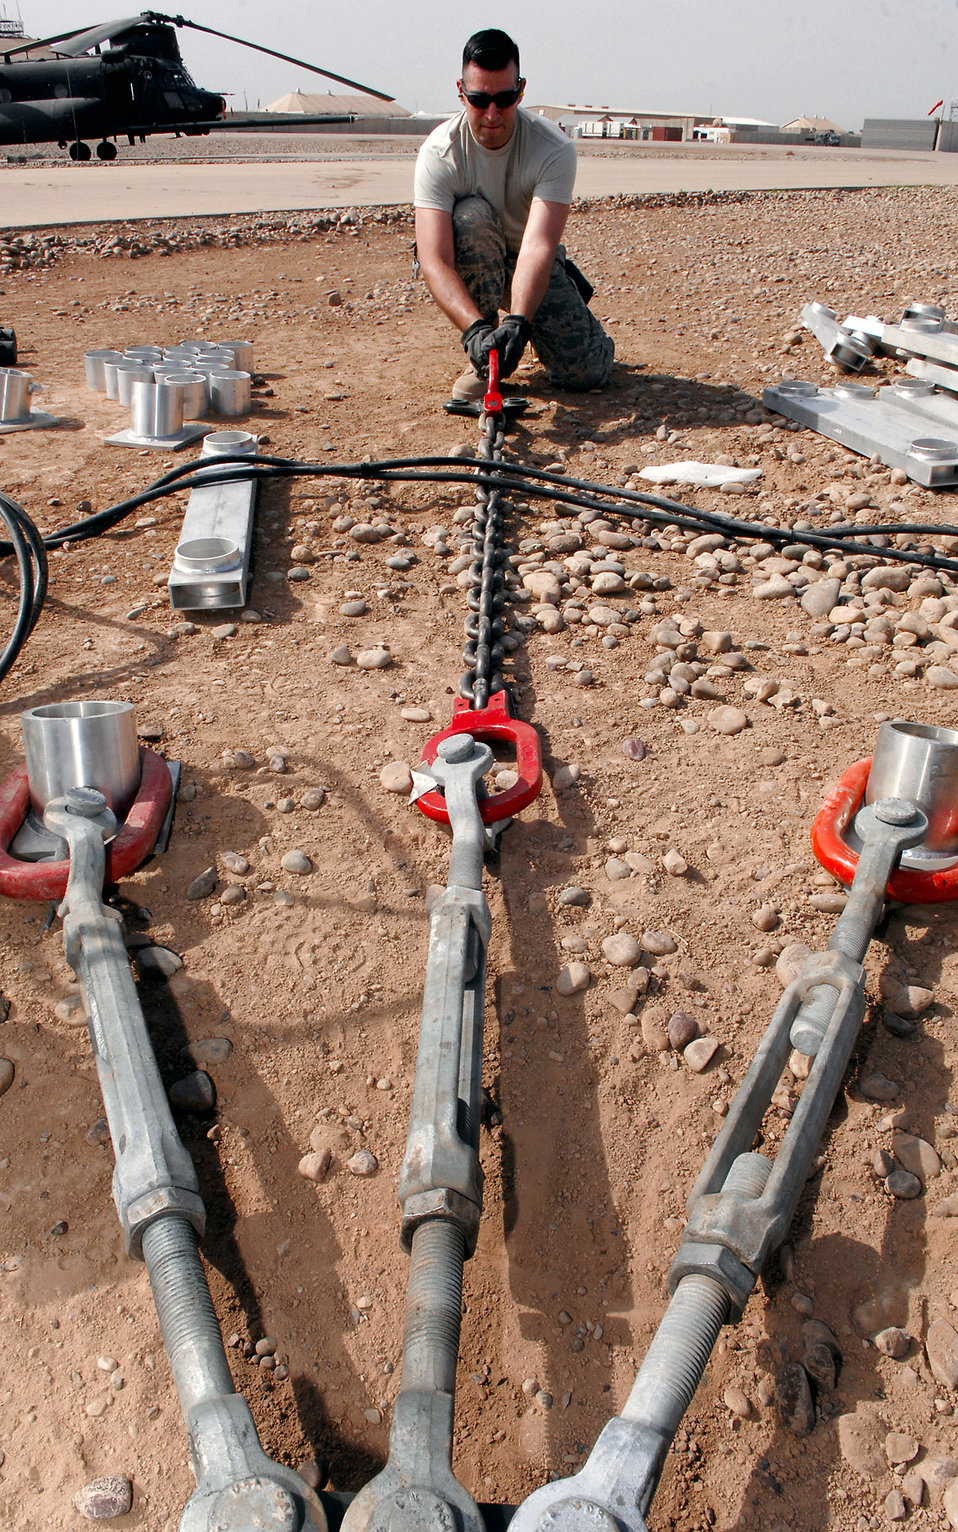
Arresting development

Tech. Sgt. Emmanuel Ramirez lays out the turn buckles and spacers before driving four-foot stakes into the ground to prevent the arresting barrier system from shifting during an emergency landing March 12 at Balad Air Base, Iraq. The system is composed of a cable stretched out across the runway attached to a braking system that brings fighter aircraft to a smooth halt during emergency landings. Sergeant Ramirez is a 332nd Expeditionary Civil Engineer Squadron power production techniciandeployed from Peterson Air Force Base, Colo.